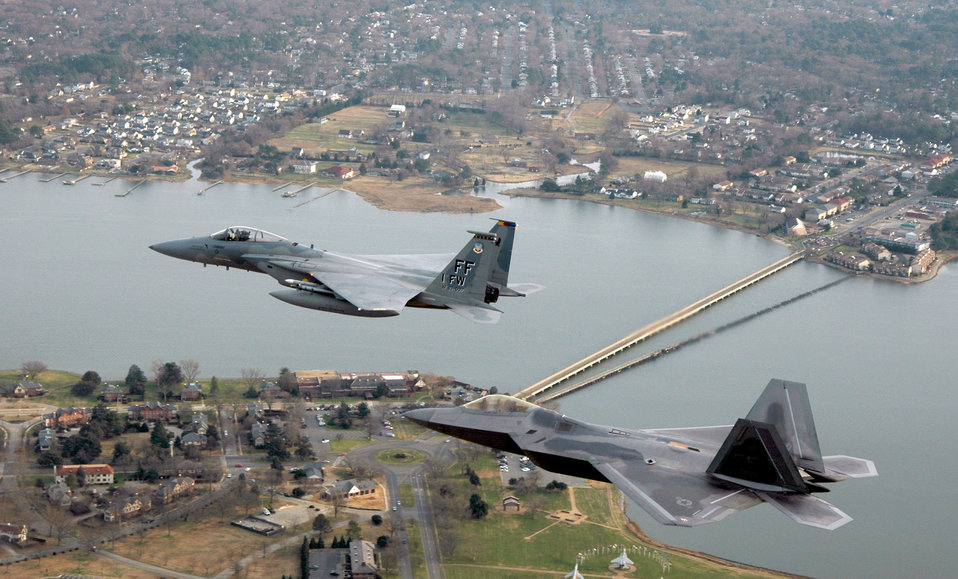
It's a 'Rap'

LANGLEY AIR FORCE BASE, Va. -- An F/A-22 Raptor (foreground) and an F-15 Eagle fly over Langley Air Force Base, Va., Jan. 7. It was the Raptor's final flight before landing at its new home here. The F/A-22 will be used as a training tool to keep 1st Fighter Wing maintainers proficient on the Raptor. The wing's 27th Fighter Squadron pilots will begin flying operational missions later this month when the second Raptor arrives.